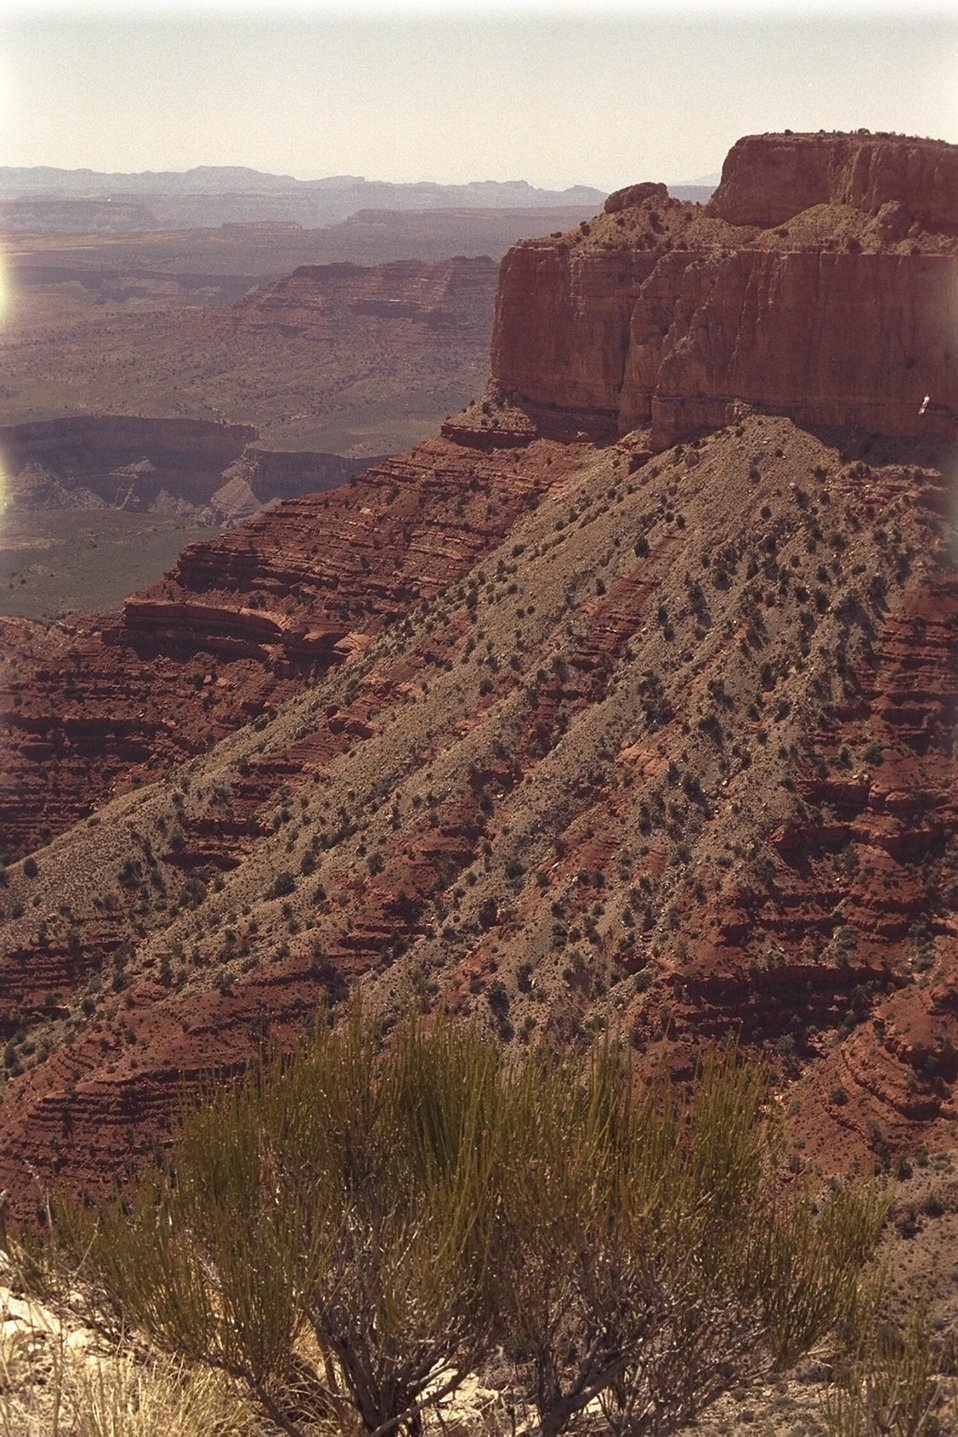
Grand Canyon Parashant National Monument.